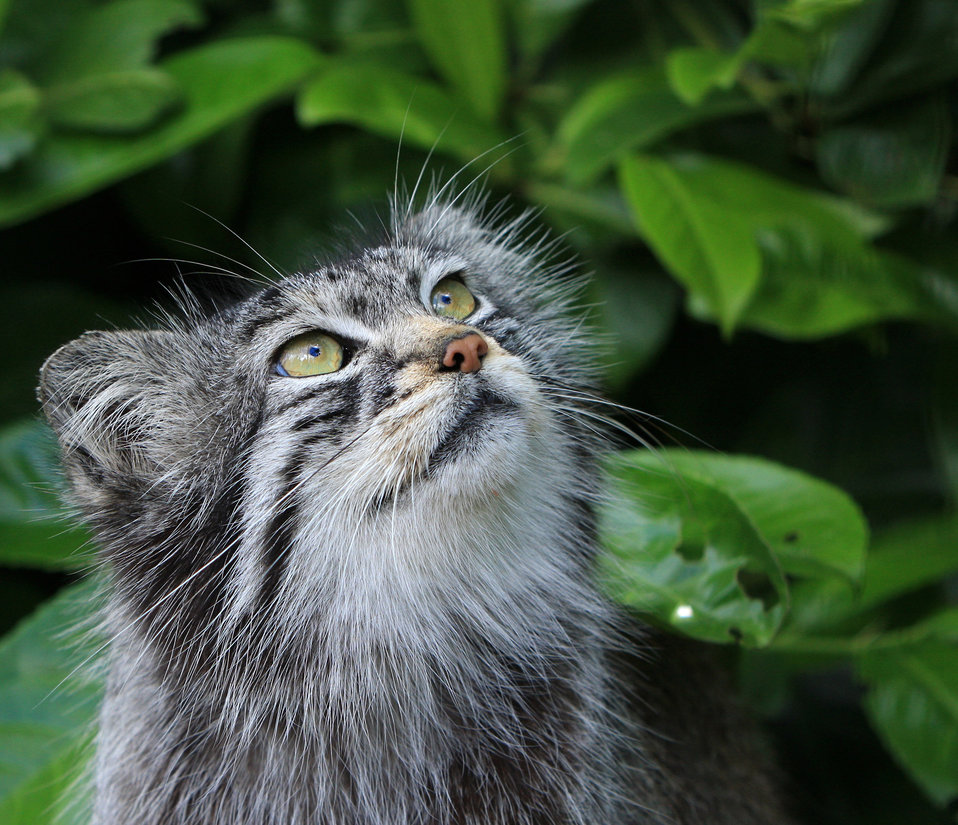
Pallas cat portrait

Beautiful close-up portrait of a pallas cat also called manul.